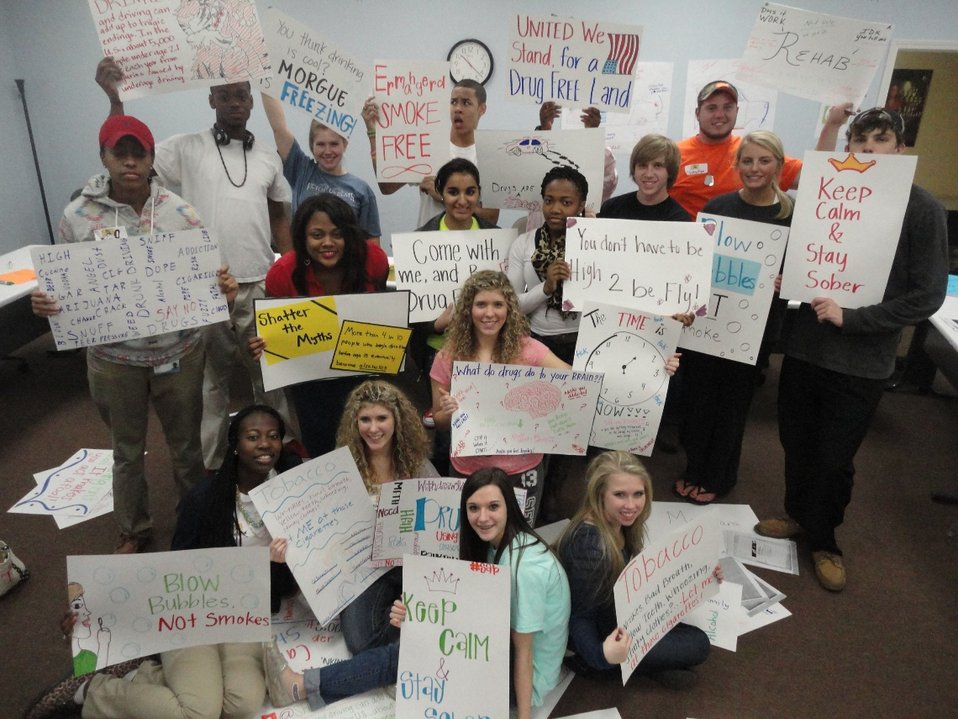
DREAM's, MS Student Advisory Board of Youth Highway Safety NDFW 2013

Mississippi High School Students participate in NDFW 2013 events.